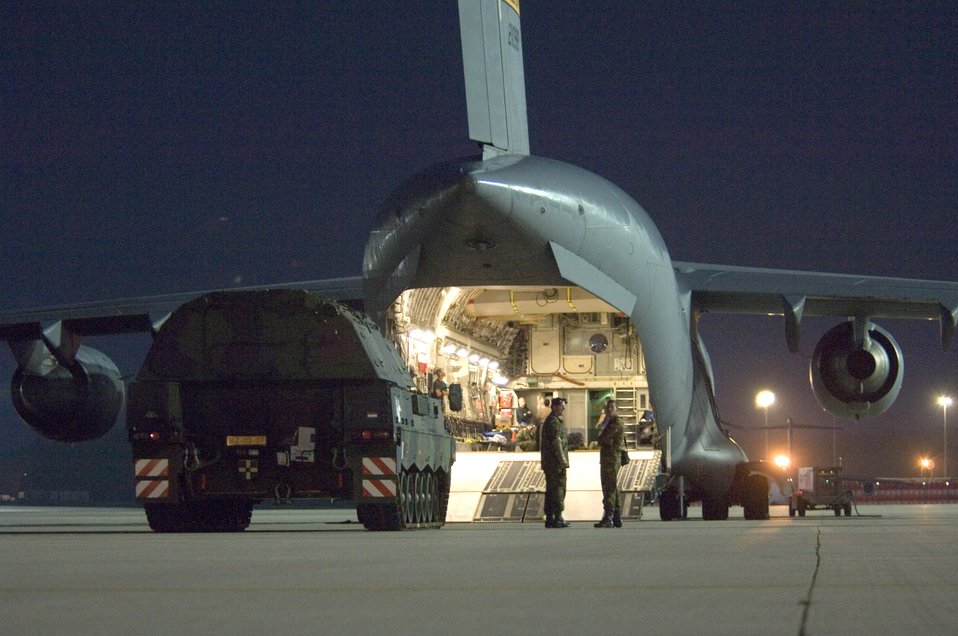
Howitzer takes flight

A Netherlander Howitzer 2000 waits on the ramp for loading onto a C-17 Globemaster III at Ramstein Air Base, Germany, Sept. 6. The C-17 crew flew the 60-ton tank to Afghanistan.